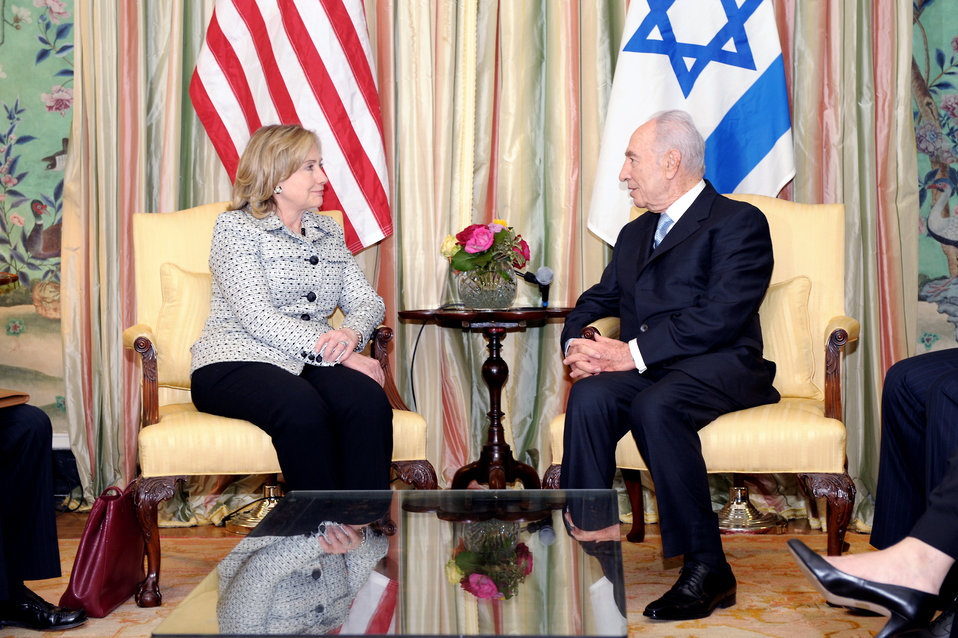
Secretary Clinton Meets With Israeli President Peres

U.S. Secretary of State Hillary Rodham Clinton holds a bilateral meeting with Israeli President Shimon Peres at the Blair House in Washington, D.C., on April 4, 2011.